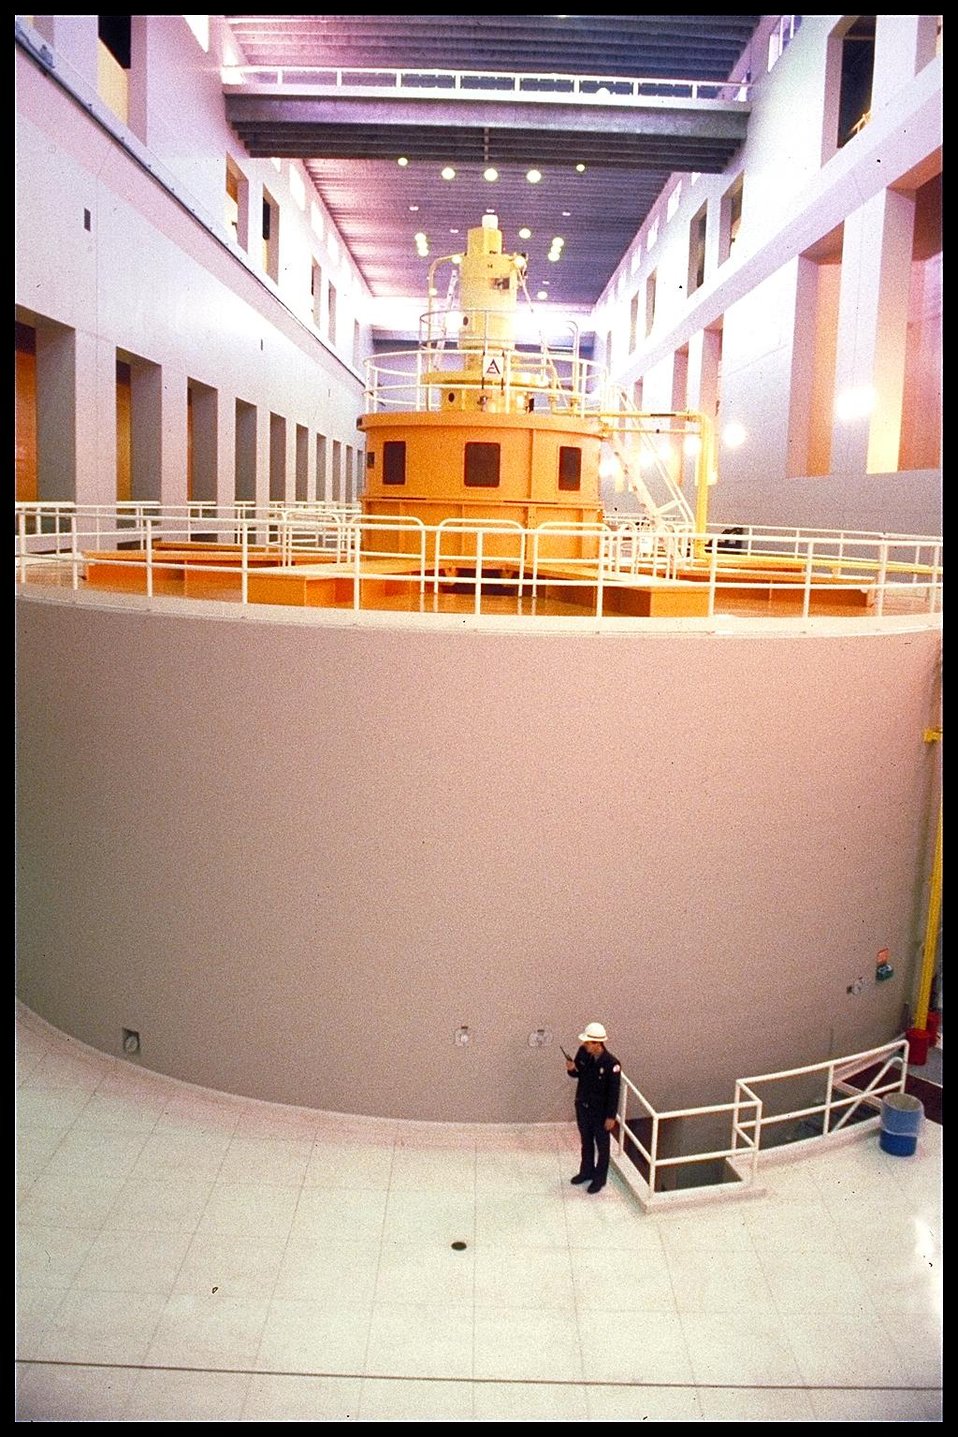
GENERATOR HALL IN THE 2ND POWER HOUSE OF THE BONNEVILLE POWER ADMINISTRATION.

THE BONNEVILLE POWER ADMINISTRATION IS A FEDERAL AGENCY THAT MARKETS AND DELIVERS MORE THAN HALF THE PACIFIC NORTHWEST'S ELECTRICITY AND MAINTAINS A NETWORK OF MORE THAN 12,300 MILES OF TRANSMISSION LINES.